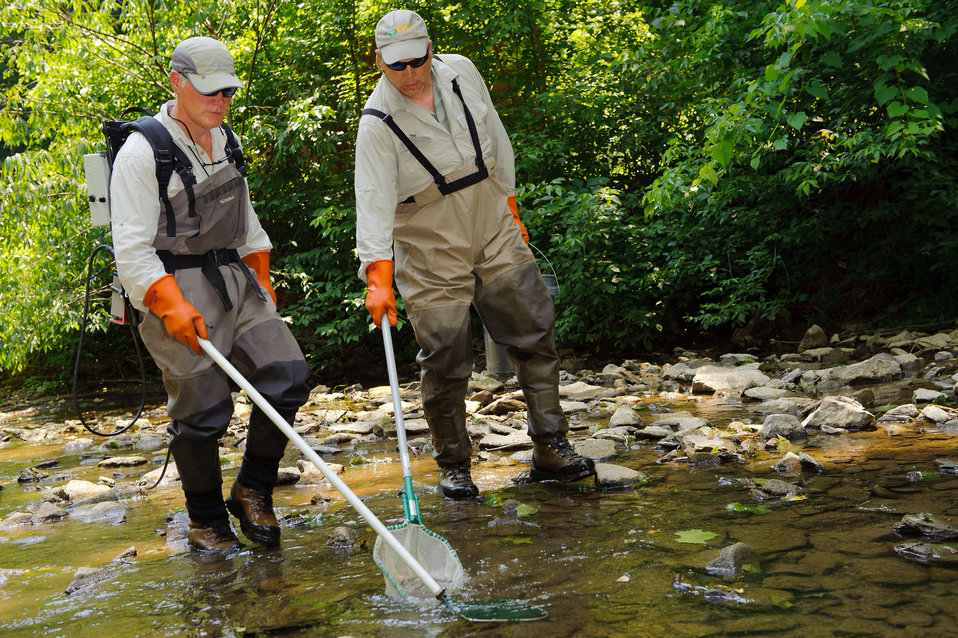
June 20, 2012 Stream sampling in West Virginia

Lou Reynolds (left) and Frank Borsuk of EPA search for fish in Wheeling Creek in West Virginia. Monitoring fish communities is an integral component of many water quality management programs, and its importance is reflected in the aquatic life designations of many states.